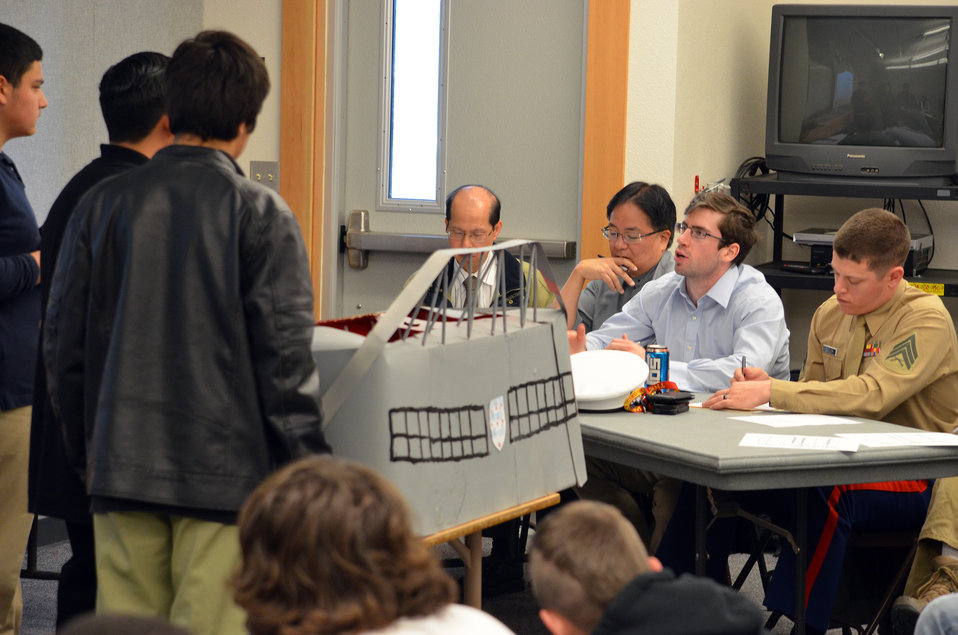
District Engineers judge students ‘Modern Marvels’ projects

Engineers from the U.S. Army Corps of Engineers Sacramento District (from left to right) Frank Lum, Alan Morita and Chris Bayliss judge a student project during the ‘Modern Marvels’ competition at Antioch High School in Antioch, Calif., Feb. 19, 2014.

The engineers used their varied fields of expertise – electrical, mechanical and structural – to help judge projects and guide students on future endeavors. The week-long student presentations included scaled models and slideshow presentations of significant engineering feats.